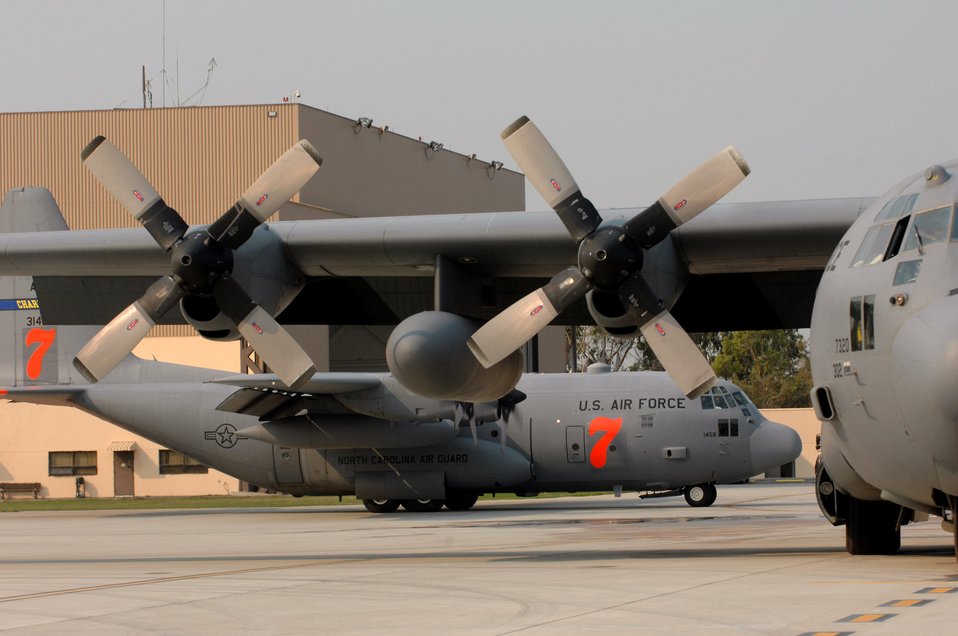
Guard, Reserve aid in California firefighting efforts

A C-130 Hercules awaits deployment in the reloading pits to support the California firefighting efforts Oct. 25 as a C-130 taxis in at Channel Islands Air National Guard Base, Calif. Air Force Reserve Command and Air National Guard Airmen are participating in the Southern California firefighting effort.